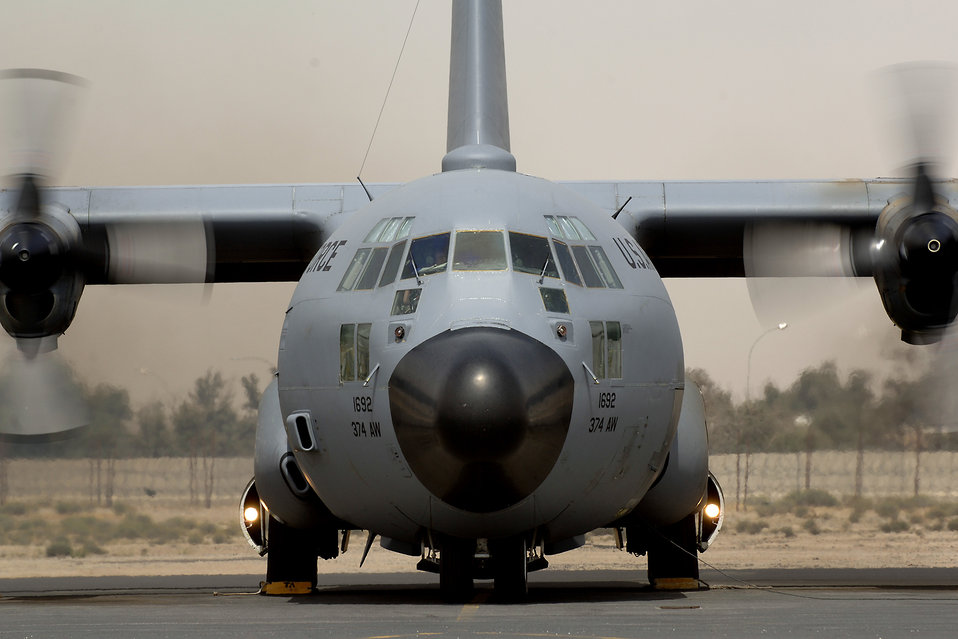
OPERATION IRAQI FREEDOM

A C-130 from the 386th Air Expeditionary Wing prepares to taxi out and fly another mission into Iraq while a dust storm invades the background at an undisclosed location in Southwest Asia on 21 March 2007.